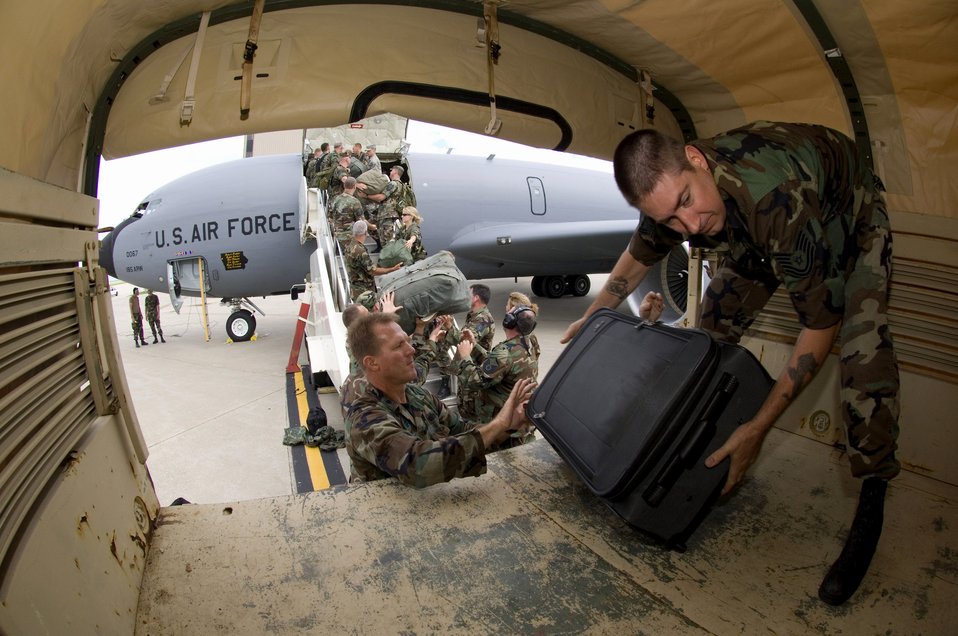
Air National Guard shores up as flood recedes

Members of the Iowa Air National Guard's 185th Air Refueling Wing unload their gear at the Eastern Iowa Airport in Cedar Rapids, Iowa. State officials activated the National Guard to the help with recovery efforts after massive flooding caused evacuations from towns along major rivers.